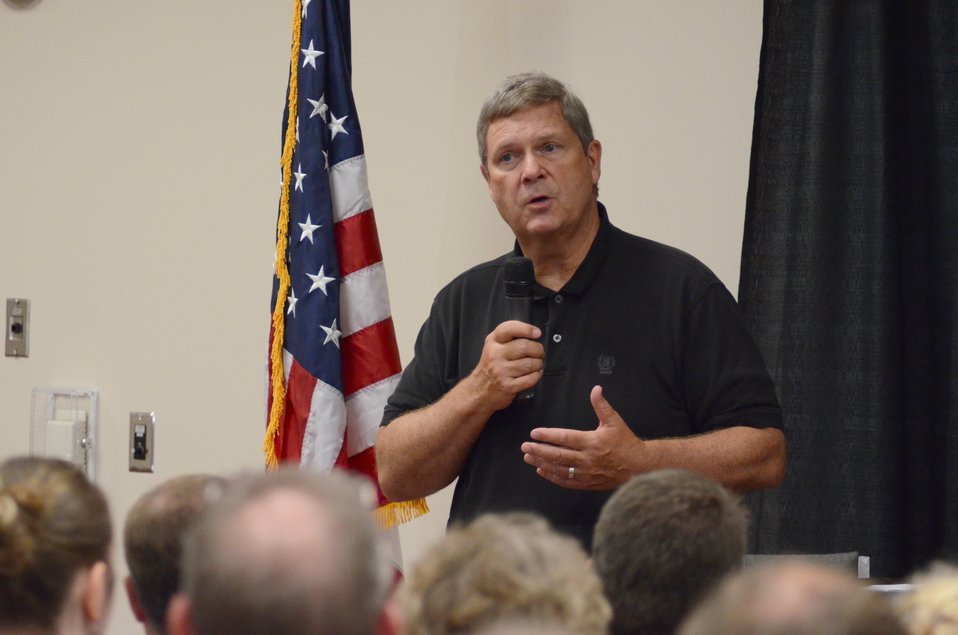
Agriculture Secretary Tom Vilsack speaks at the White House Rural Forum at the Wisconsin State Fair, in West Allis, WI, on Thursday, August 4, 2011, to businesses and community leaders, farmers and ranchers to explore ways federal, state and local officials can work together to improve economic conditions and create jobs. The forum is part of a series of White House Rural Roundtables that are being held across the country this summer with senior Administration officials.